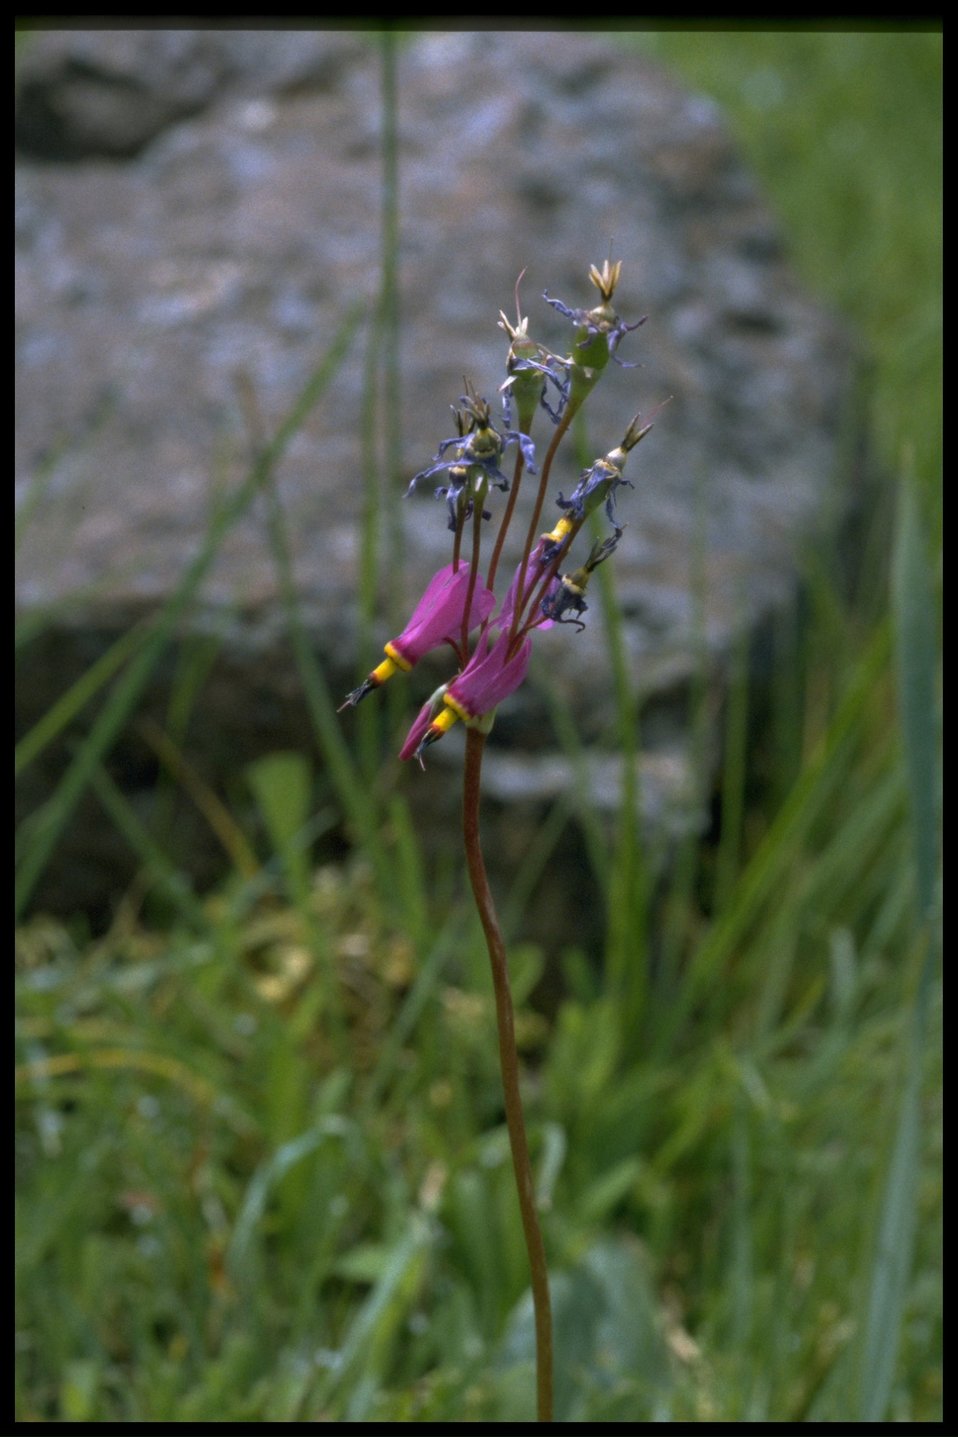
Closeup shot of Shooting Star wildflower.